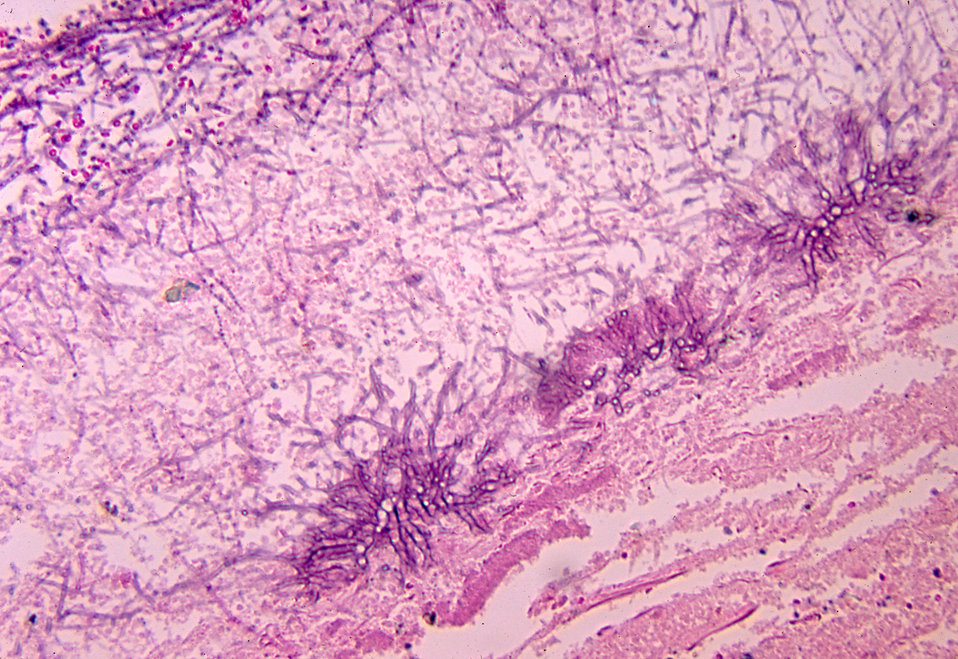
This micrograph depicts the histopathologic features of aspergillosis including the presence of fungal hyphae.